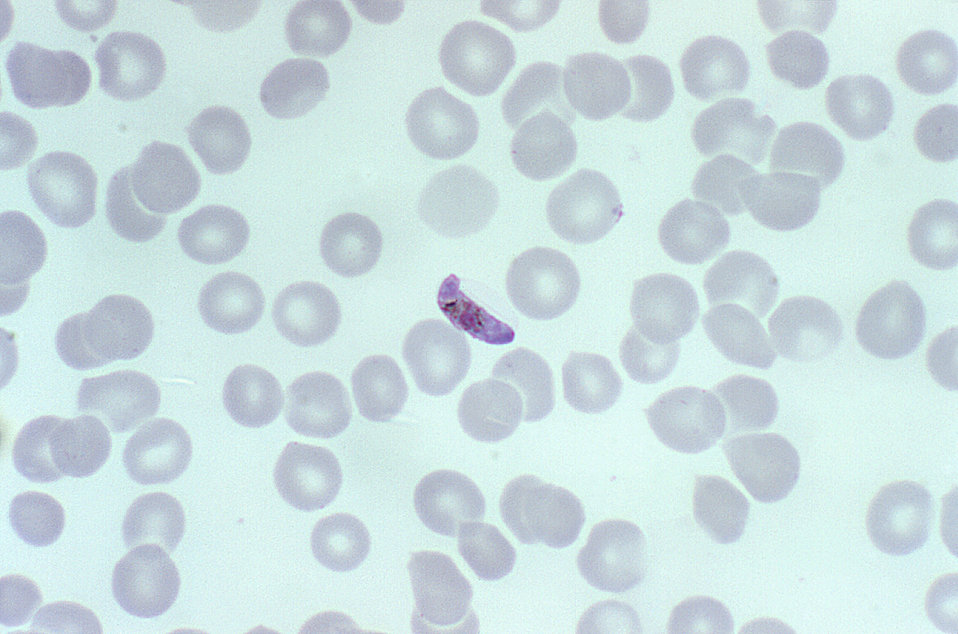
A photomicrograph of a blood smear containing a macrogametocyte of the parasite Plasmodium falciparum.